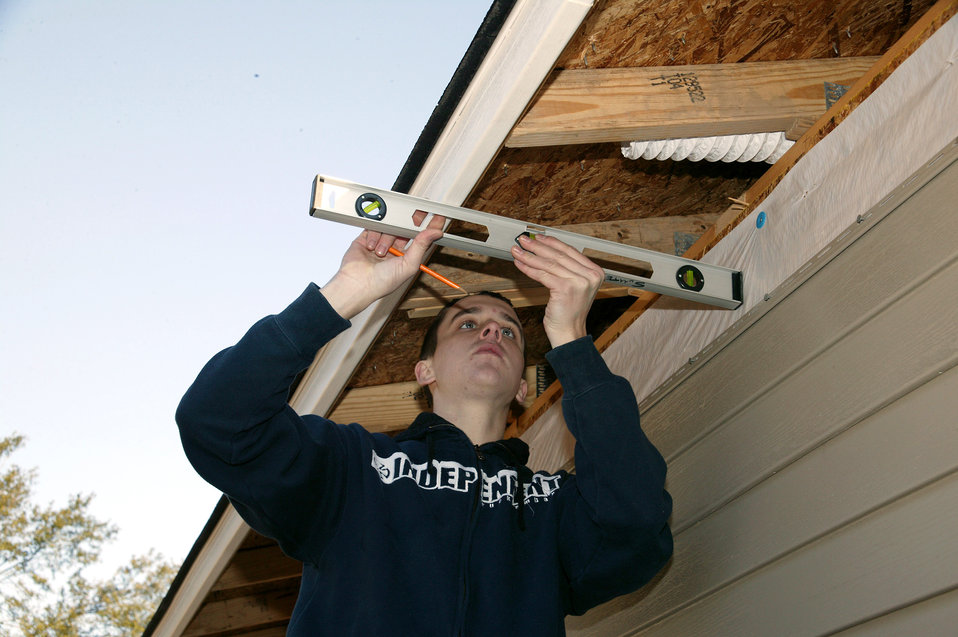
Habitat for Humanity

SUMTER, S.C. (AFPN) -- Airman 1st Class Carl Disher works on one of three homes being constructed Oct. 29 by the Habitat for Humanity. Airman Disher is a volunteer from the 20th Component Maintenance Squadron at Shaw Air Force Base, S.C.